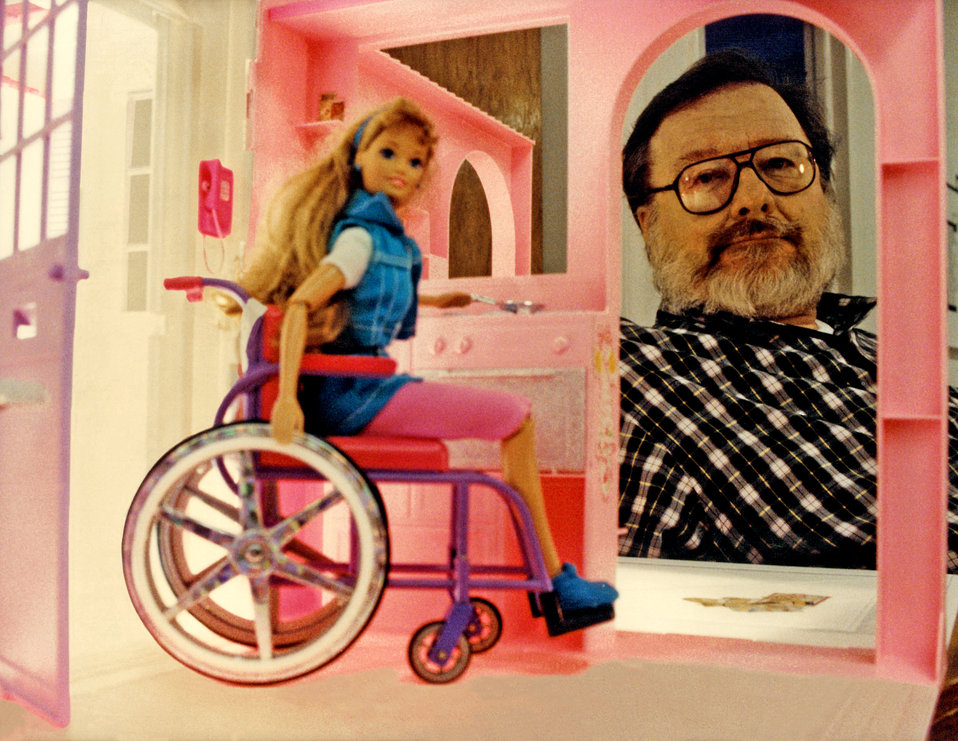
This was one of three images (PHIL# 9135 - 9137) depicting an attempt by a toy manufacturer to produce a toy character, which displayed characteristics that emulated those of a mobility-challenged person who was a wheelchair user. This disabled character was portrayed in the manner that echoed the style of the rest of their toy line. In doing so, the manufacturer tried to, in a sense, mainstream the knowledge of what is faced by the disabled in the real world through play, and therefore, was as educational, as it was entertaining to the childhood demographic group. Here Ron Mace was shown looking through a door in the playhouse. Mr. Mace was a principle of Barrier Free Environments, Inc. (BFE), and a co-founder of the Center for Universal Design (CUD). He developed the concept of universal design in the mid-1980's, and died in 1998.